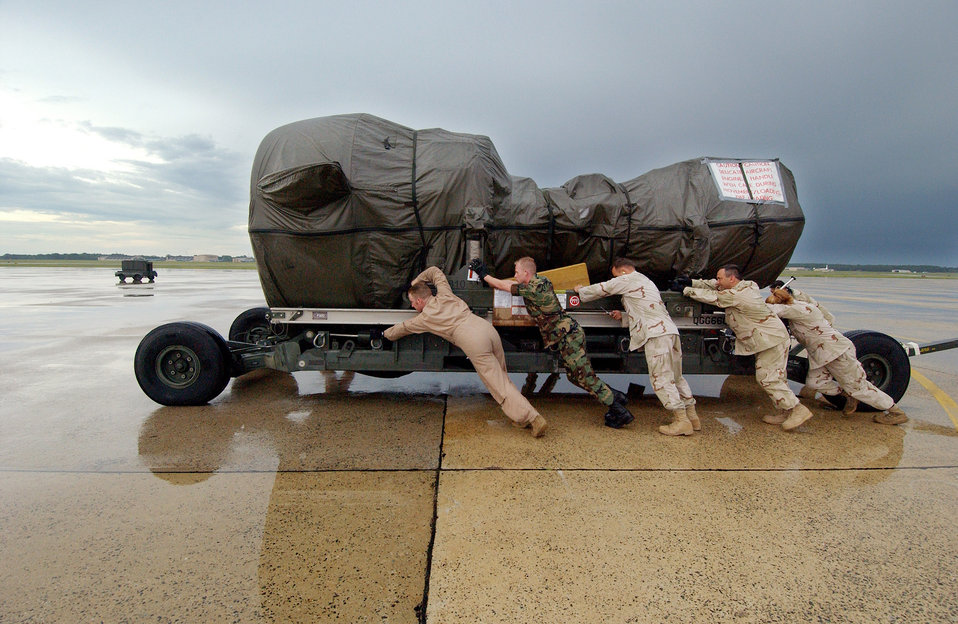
Teamwork

Air Force Reservists from the 452nd Air Mobility Wing and active duty Airmen prepare to load an engine June 9 aboard an awaiting C-17 Globemaster III at Andrews Air Force Base, Md. The 452nd Air Mobility Wing out of March Air Reserve Base, Calif., are flying missions throughout Southwest Asia.